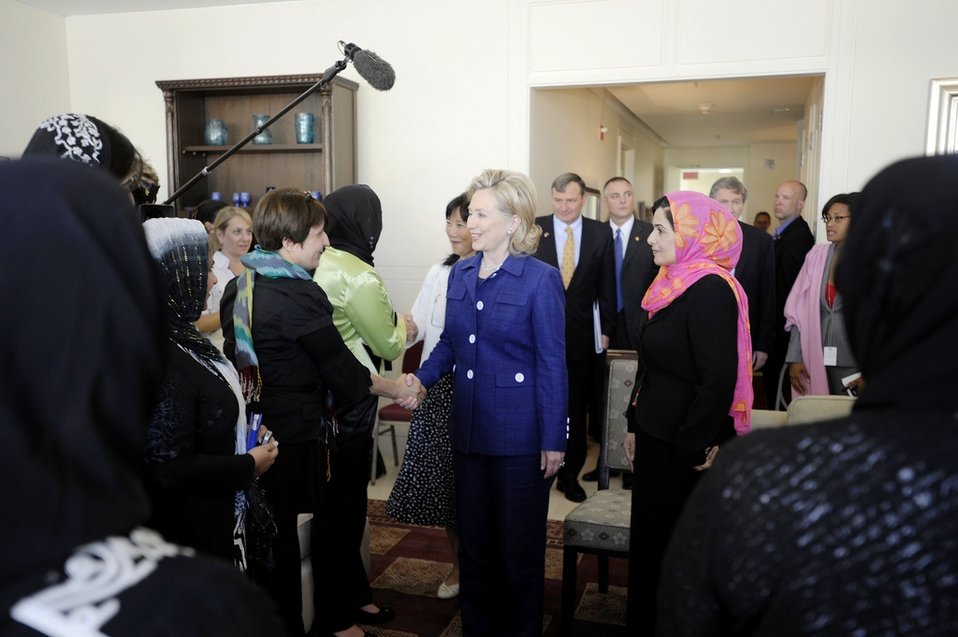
Secretary Clinton Responds to Reporters

U.S. Secretary of State Hillary Rodham Clinton responds to reporters after participating in a women’s empowerment event hosted by EU High Representative for Foreign Policy Catherine Ashton in Kabul, Afghanistan, on July 20, 2010.